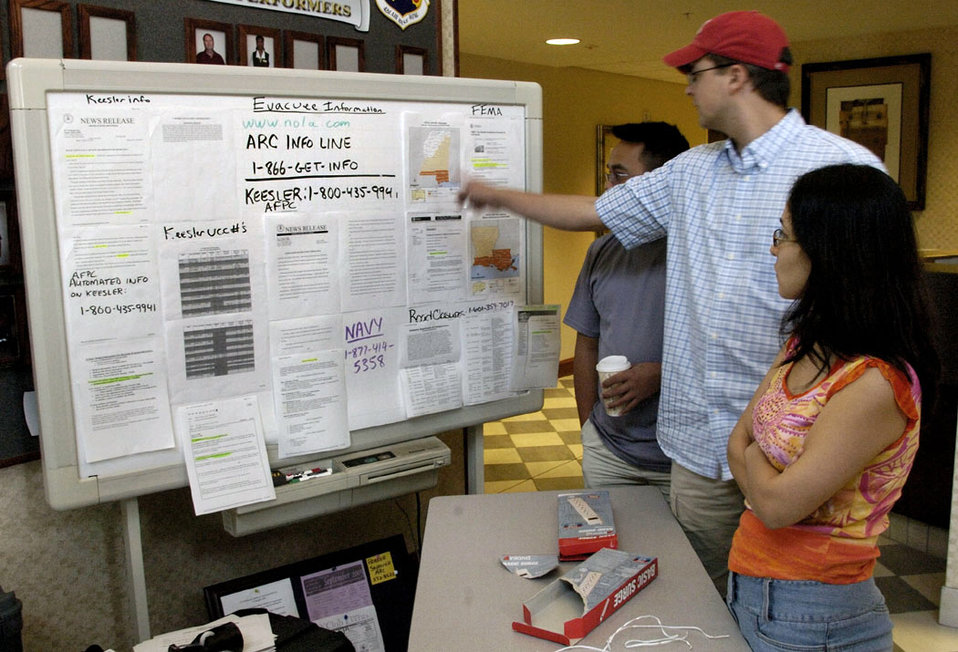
Maxwell AFB serves as staging facility for hurricane operations

MAXWELL AIR FORCE BASE, Ala. -- People here look over the latest Hurricane Katrina information. So far, 750 hurricane refugees from flooded coastal regions have made their way here to escape what President Bush described as the worst natural disaster in America's history.